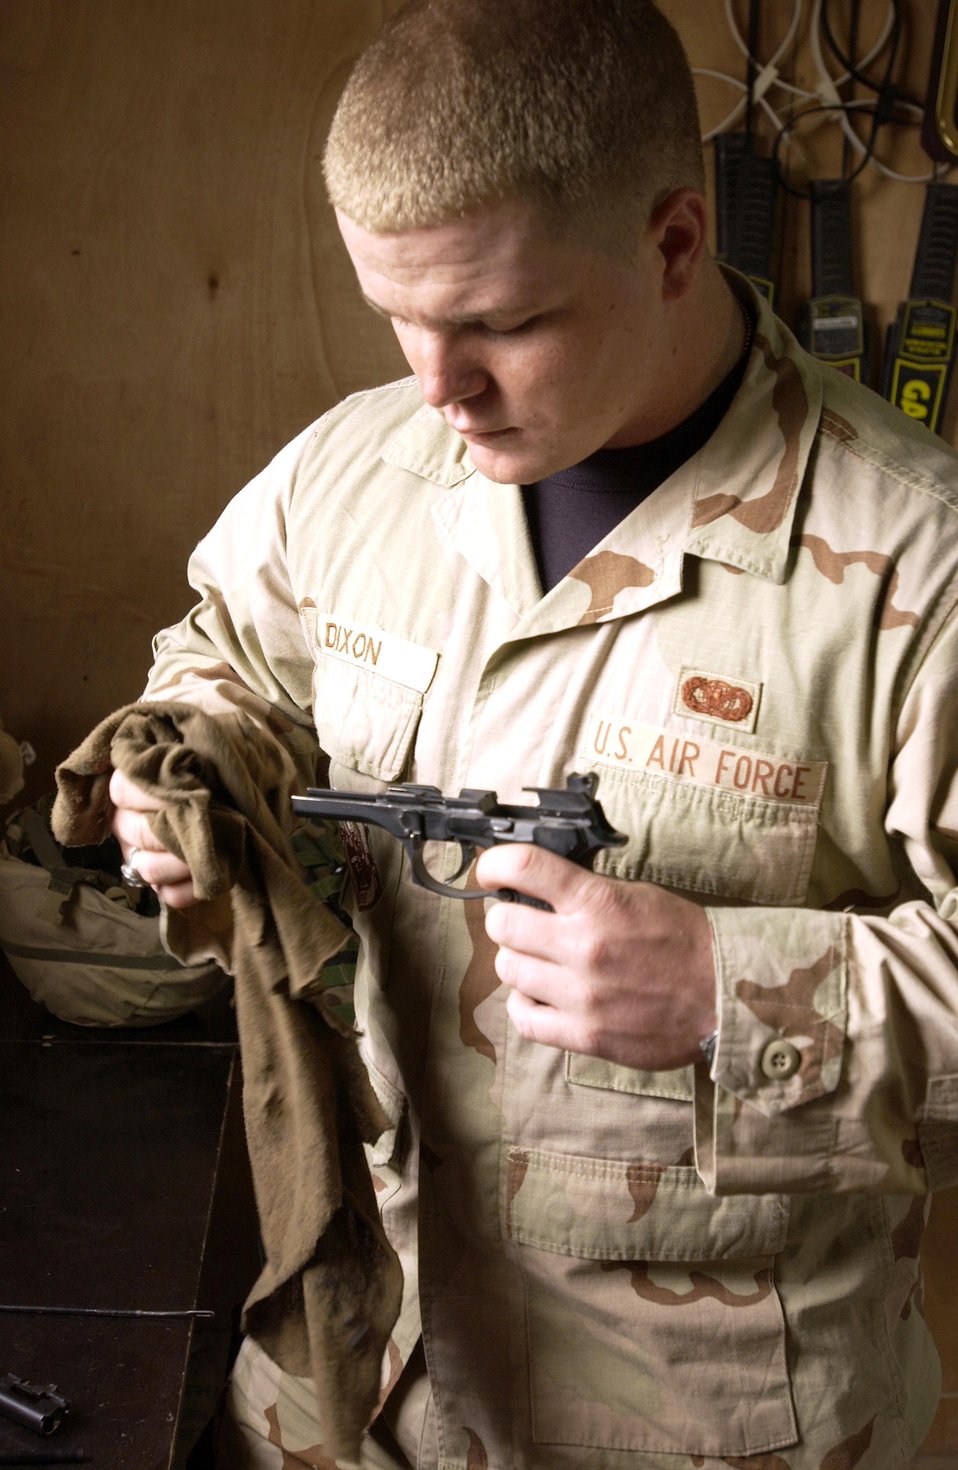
Beretta maintenance

CAMP BUCCA, Iraq -- Senior Airman Clifford Dixon performs maintenance on his M-9 Beretta. Airman Dixon is deployed here from Luke Air Force Base, Ariz.